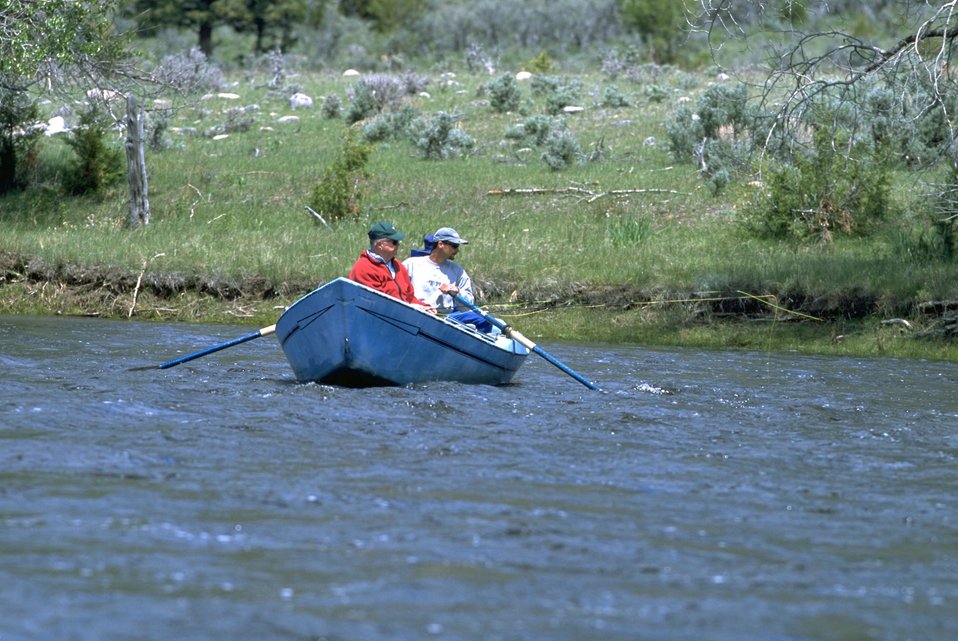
Fishing on the Big Hole River